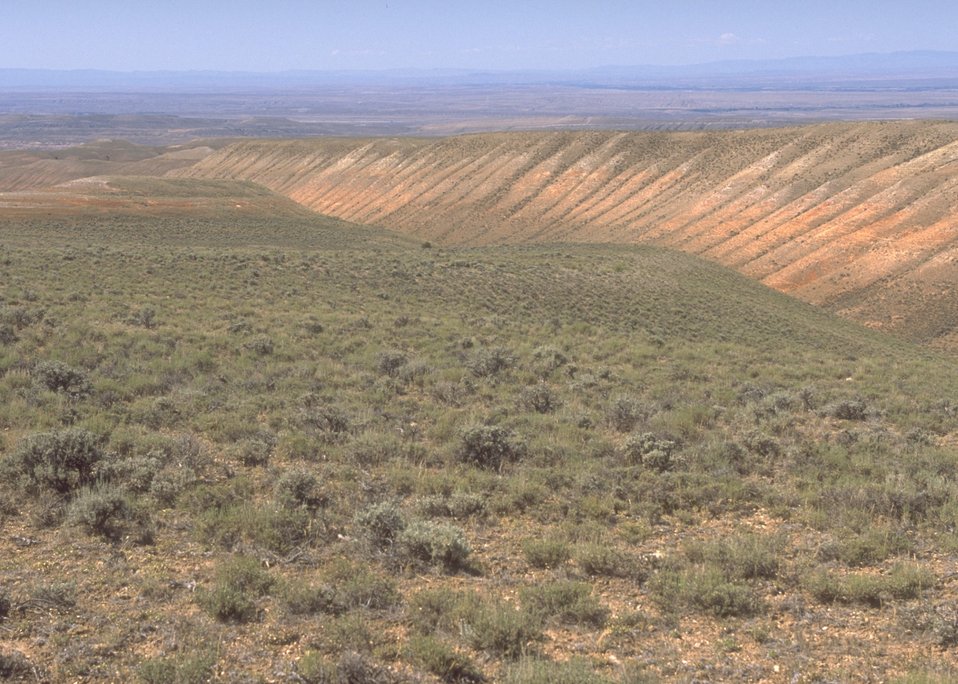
View along the Red Gulch/Alkali Back Country Byway, Worland Field Office.